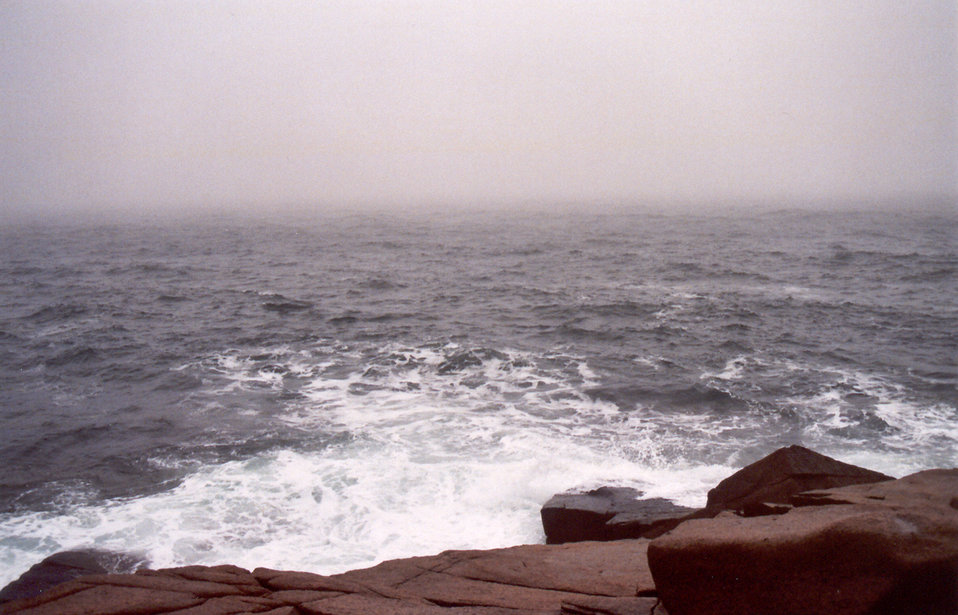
Marine habitat in Maine